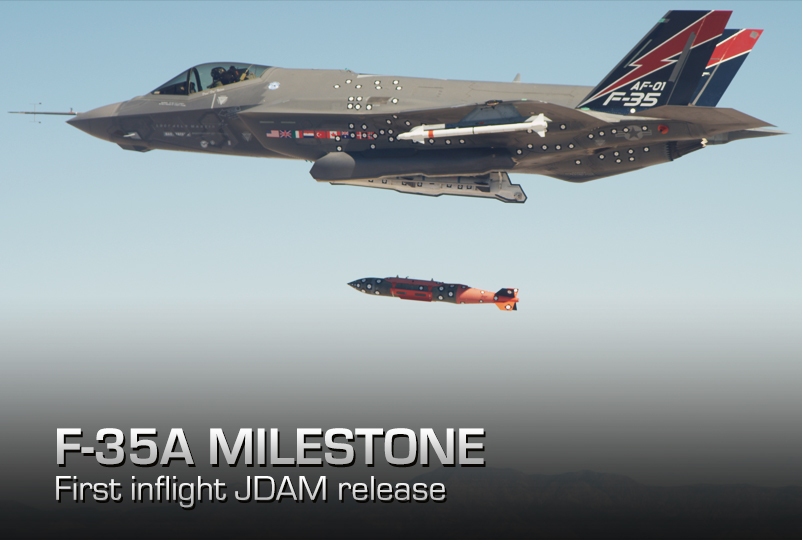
F-35A Weapons Release